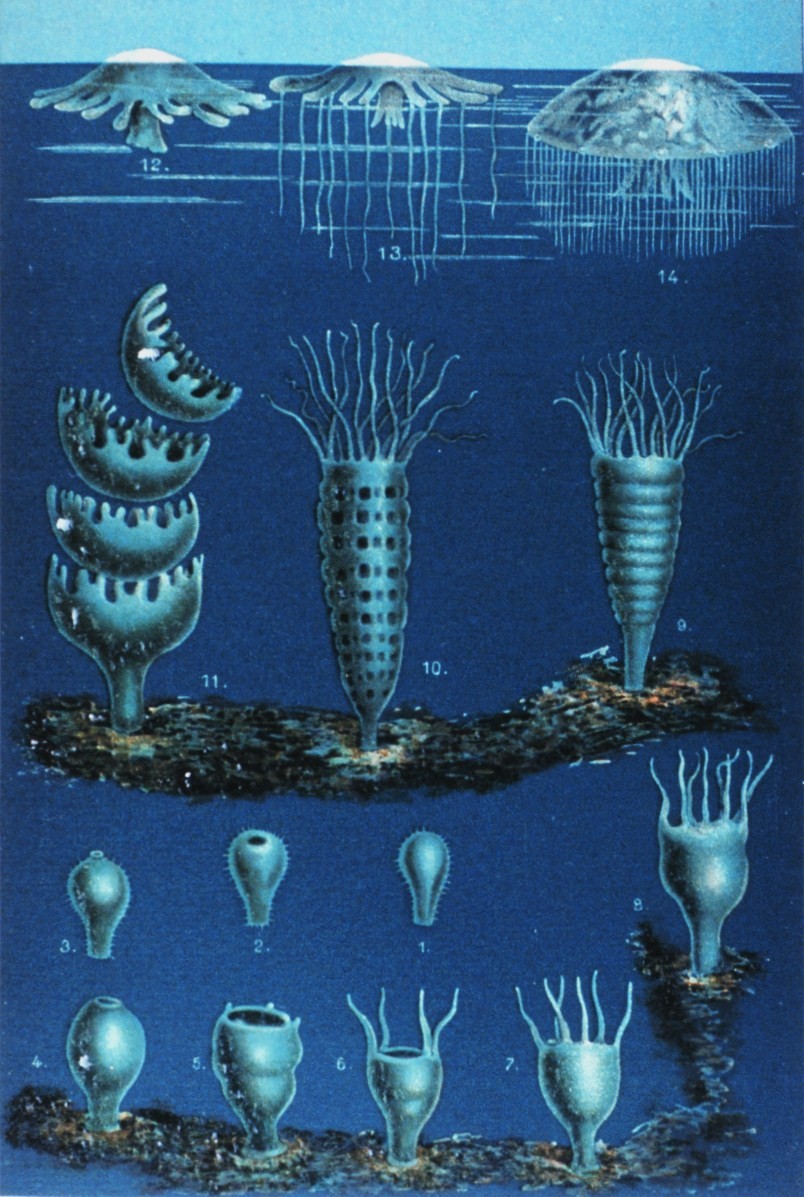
'Die Entwickelung der Meduse' in: 'Das Meer' by M. J. Schleiden, 1804-1881. P. 382. Library Call Number QH91.S23 1888.